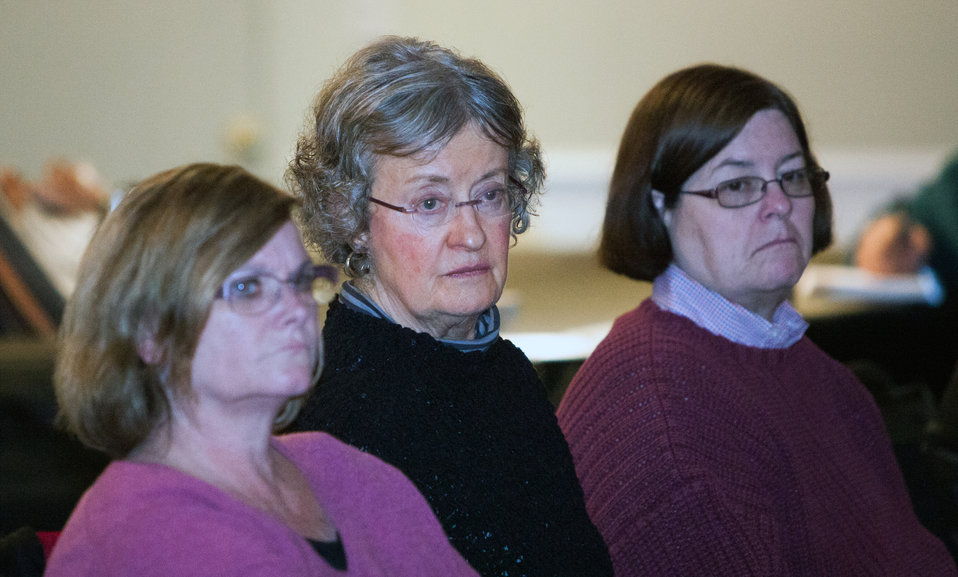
Shasta-Trinity National Forest Supervisor Sharon Heywood (center) listens to Agriculture Secretary Tom Vilsack speak at a community round table in Weaverville, CA on Dec. 10, 2012.